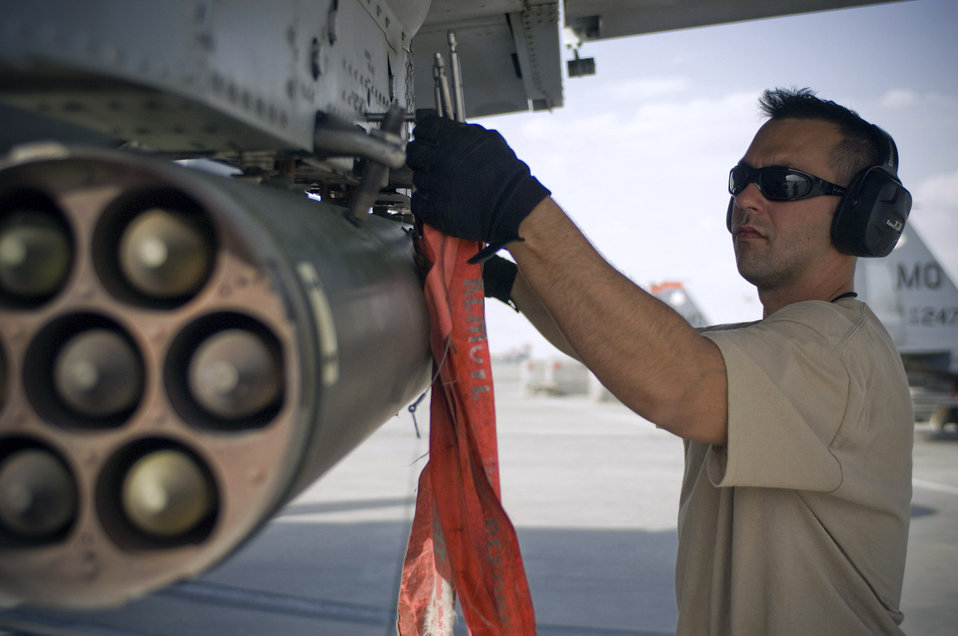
Willow Grove unit completes last A-10 deployment

A crew chief with the 455th Expeditionary Aircraft Maintenance Squadron removes the final tags on an A-10 Thunderbolt II just prior to a close-air-support mission at Bagram Air Field, Afghanistan, Sept. 12. Aircrew and maintainers from the 111th Fighter Wing, an Air National Guard unit from Pennsylvania, are preparing to head home after what could be their last combat deployment with the A-10. The 111th FW is scheduled to lose the A-10 beginning in the spring of 2009.